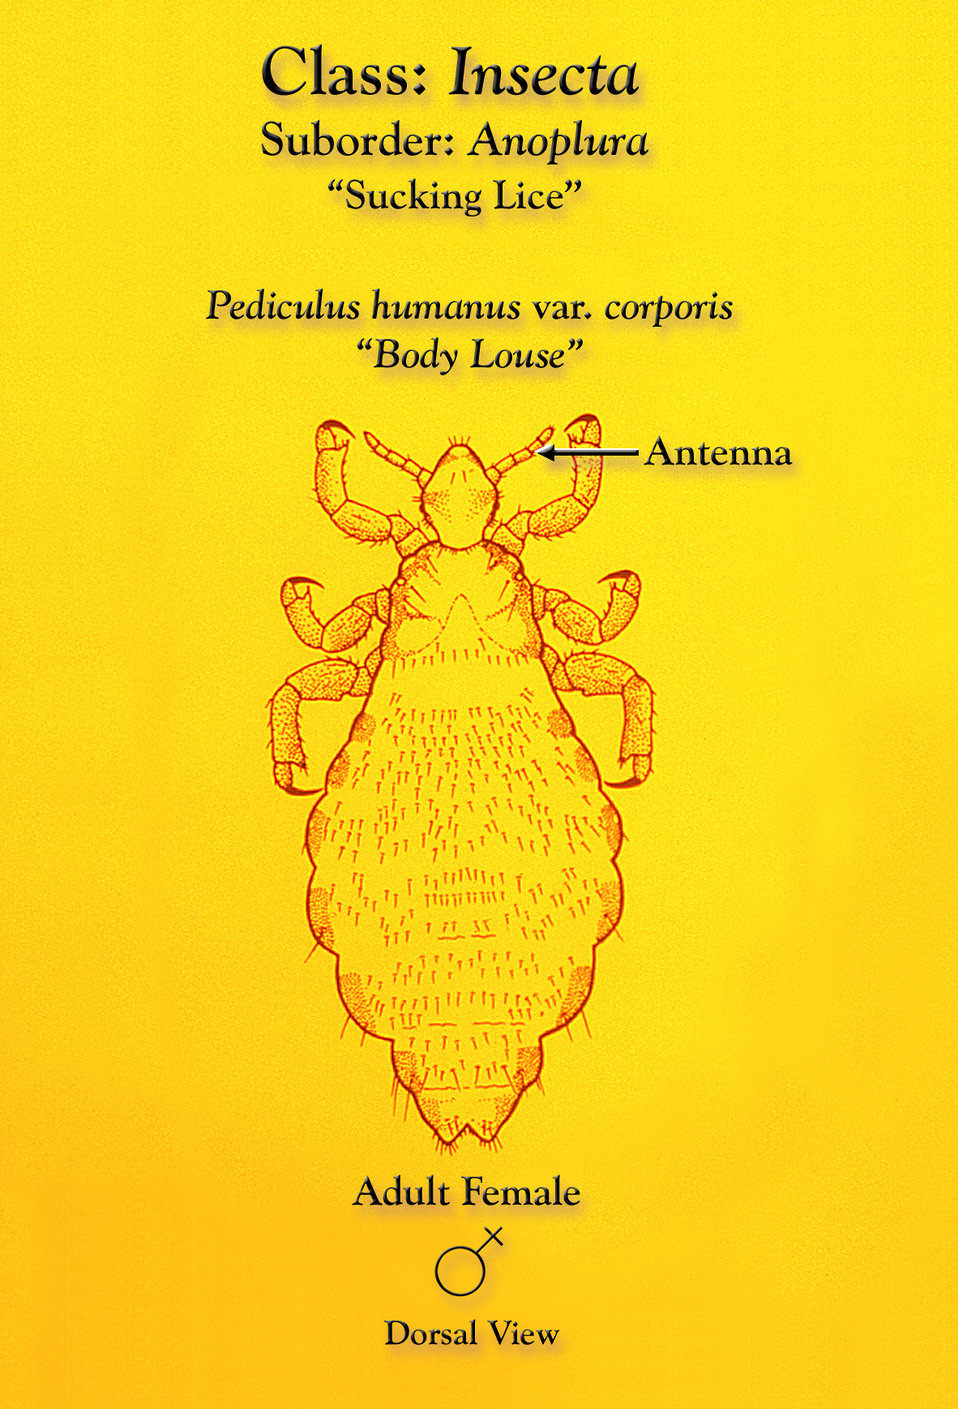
This illustration depicts a dorsal view of a female body louse, Pediculus humanus var. corporis.